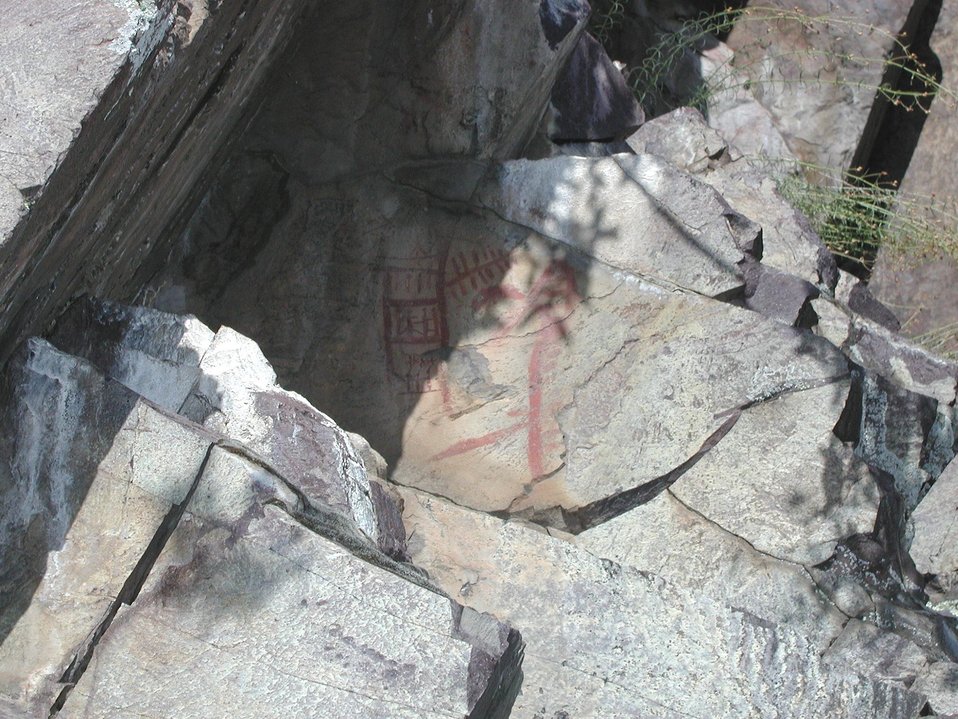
Cultural resources Petroglyphs on Lower Salmon River Cottonwood Field Office UCSC Upper Columbia Salmon Clearwater District